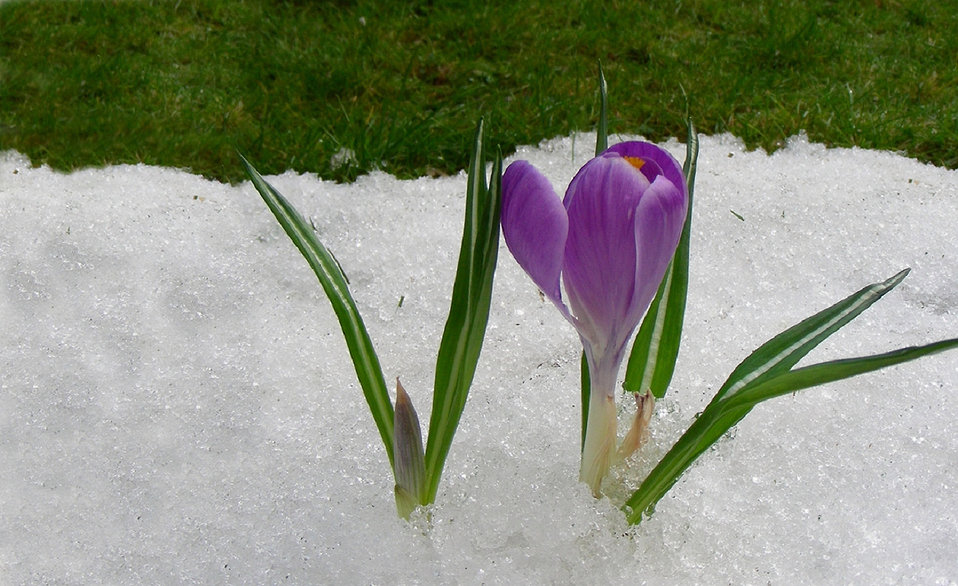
Icebreaker

Crocuses struggle through the snow.